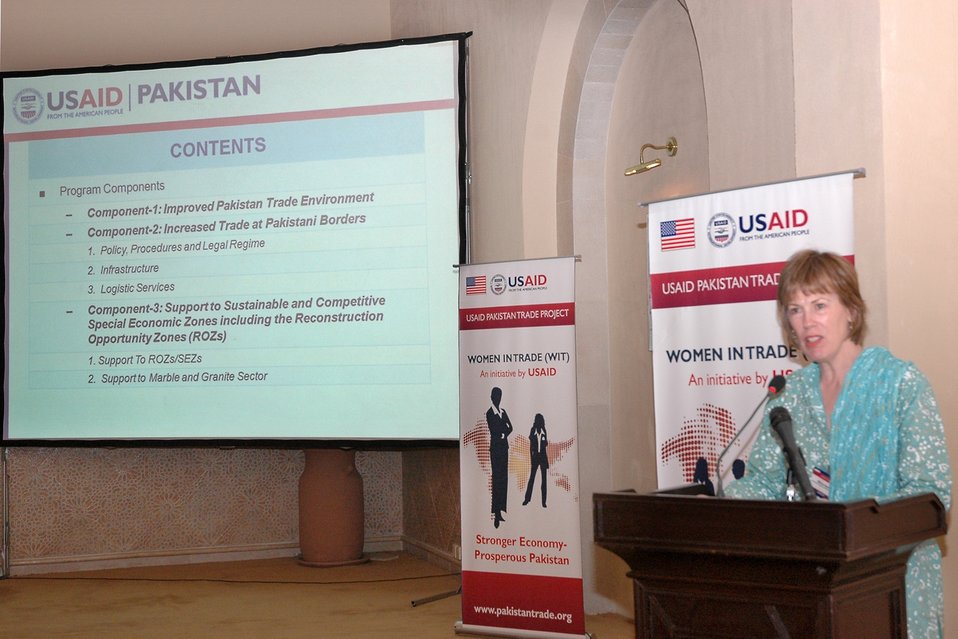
Dr. Marilyn Wyatt, wife of U.S. Ambassador Cameron Munter, speaks at the launch of USAID's Women in Trade Initiative.

Dr. Wyatt: “This initiative is part of the United States’ commitment to the people of Pakistan to support women’s empowerment.”